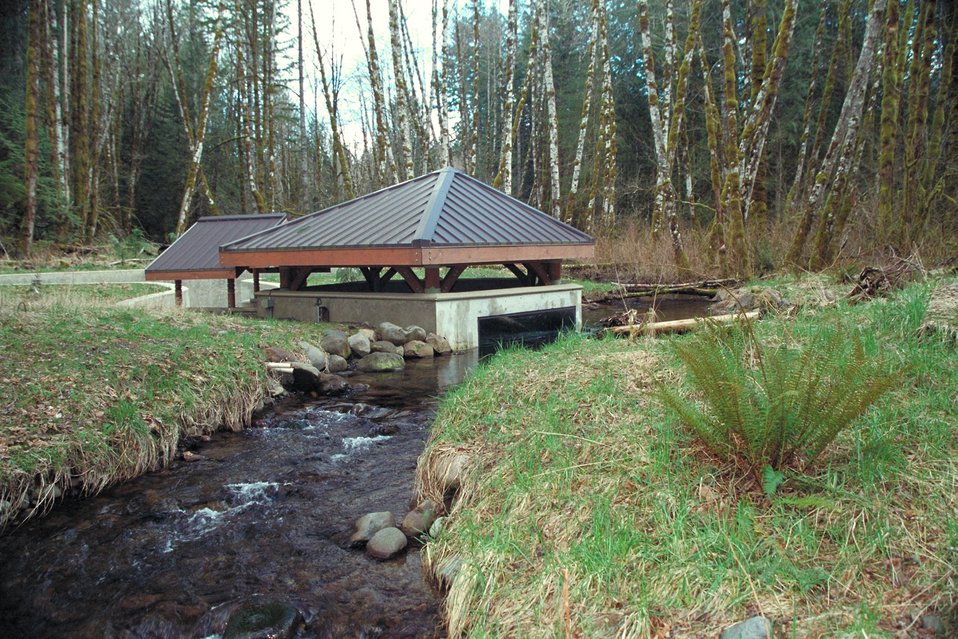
Cascade Stream Watch is an environmental education program conducted at BLM's Wildwood Recreation site.